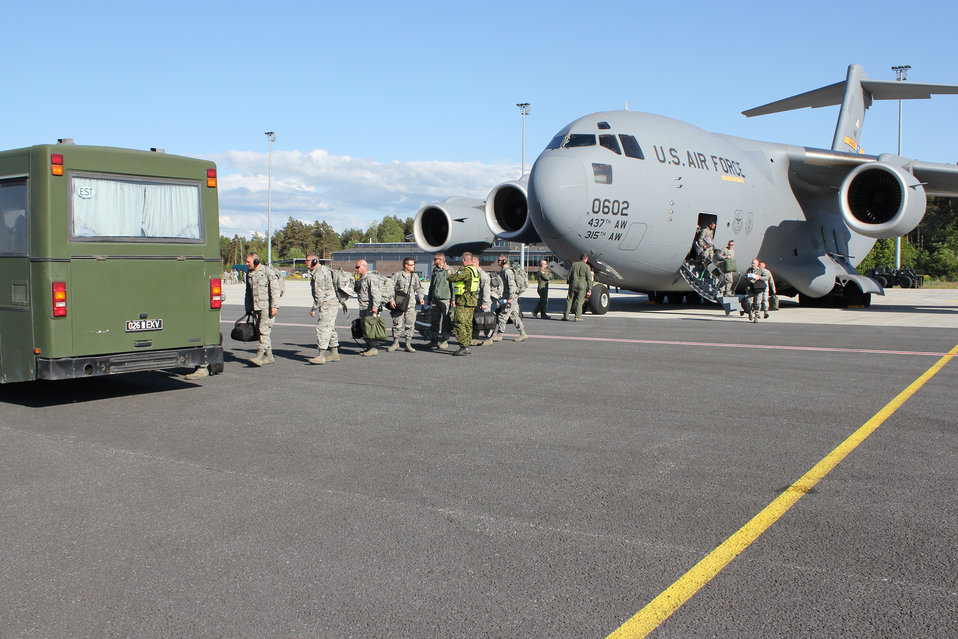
Michigan ANG lands in Estonia

Airmen from the Michigan Air National Guard’s 127th Wing disembark from a C-17 Globemaster III at Amari Air Base, Estonia, June 8, 2012. The C-17 was delivering cargo and Air Force personnel to Estonia to participate in Saber Strike 2012, a multi-national exercise based in Estonia and Latvia.